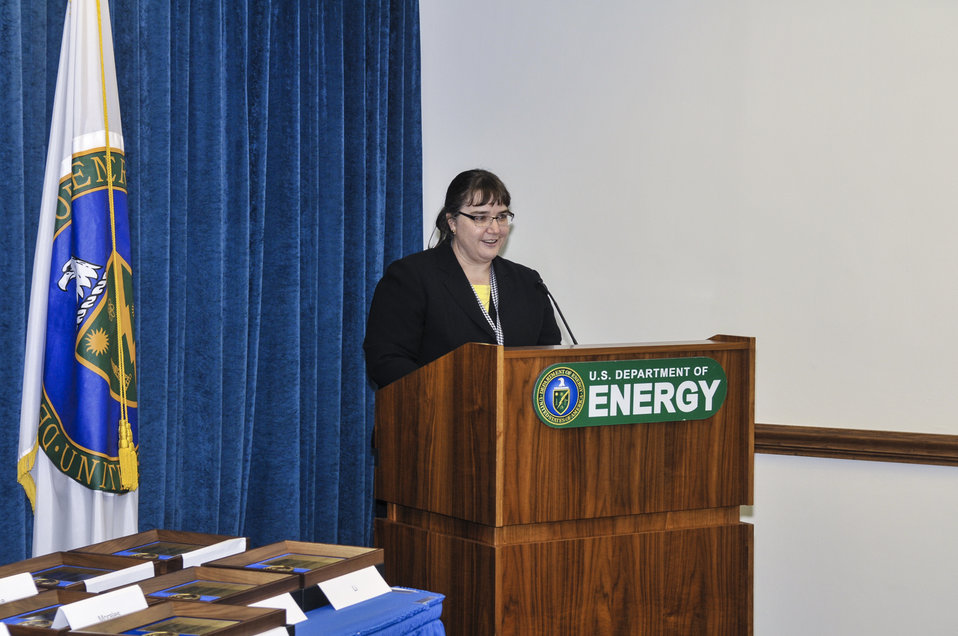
PECASE Awards- DOE Secretary E. Moniz on April 14, 2014. DOE Office of Science Senior Technical Advisor Linda Blevins.